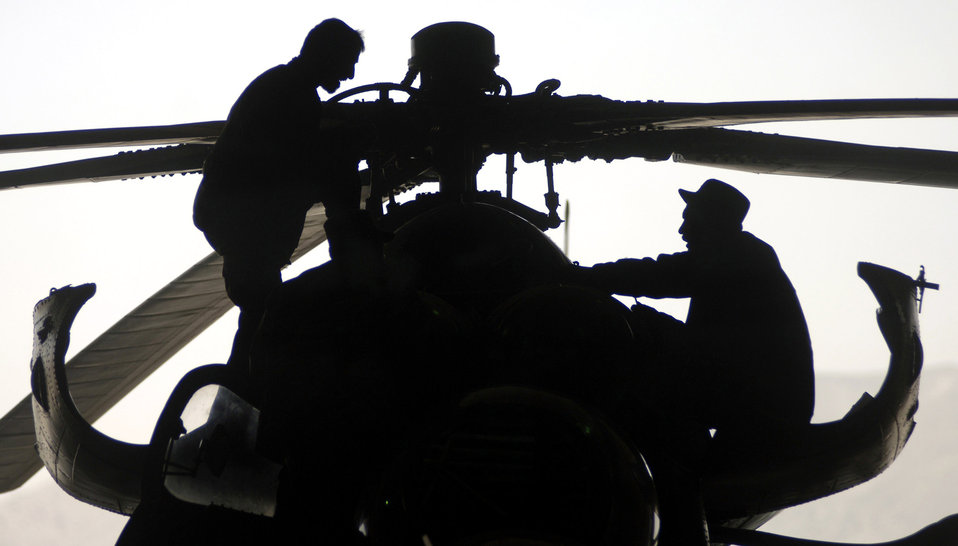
U.S. forces mentor Afghan Air Corps to 'stand on own'

Afghan National Air Corp maintainers repair MI-35 helicopter April 9 on the Kabul International Airport flightline. Air Force mentors assigned to Defense Reform Directorate Air Division under Combined Security Transition Command - Afghanistan provide guidance to soldiers with the Maintenance Operations Group for the ANAC.